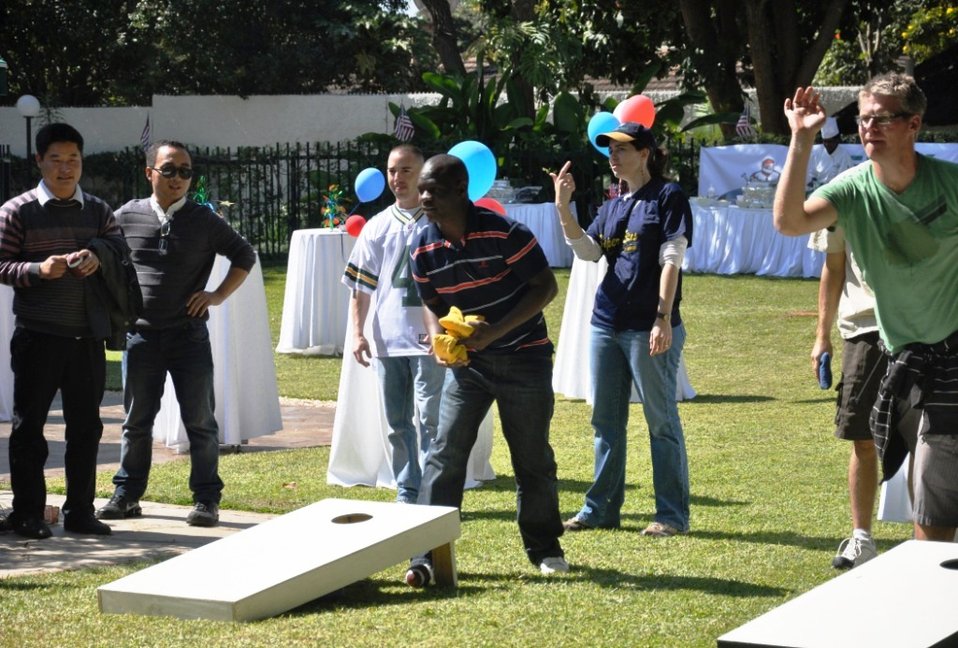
Americans and Zambians compete in a bean bag toss contest at the U.S. National Day commemoration on June 12, 2010, at the Ambassador's residence in Lusaka, Zambia.